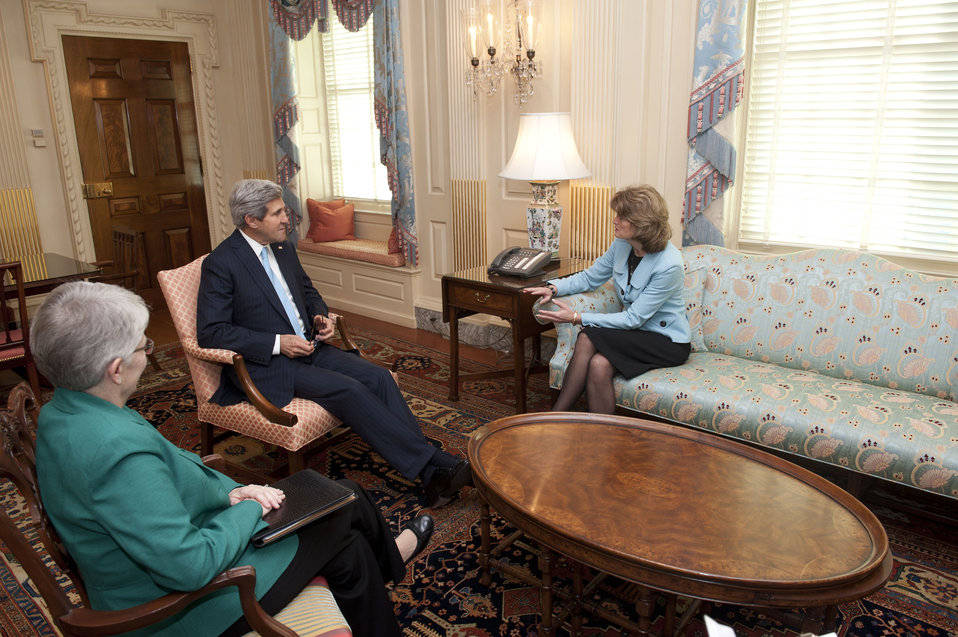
Secretary Kerry Meets With Senator Murkowski

U.S. Secretary of State, with Assistant Secretary of State for Oceans and International Environmental and Scientific Affairs Dr. Kerri-Ann Jones, meets with Senator Lisa Murkowski to discuss Arctic issues at the U.S. Department of State in Washington, D.C., on November 19, 2013.